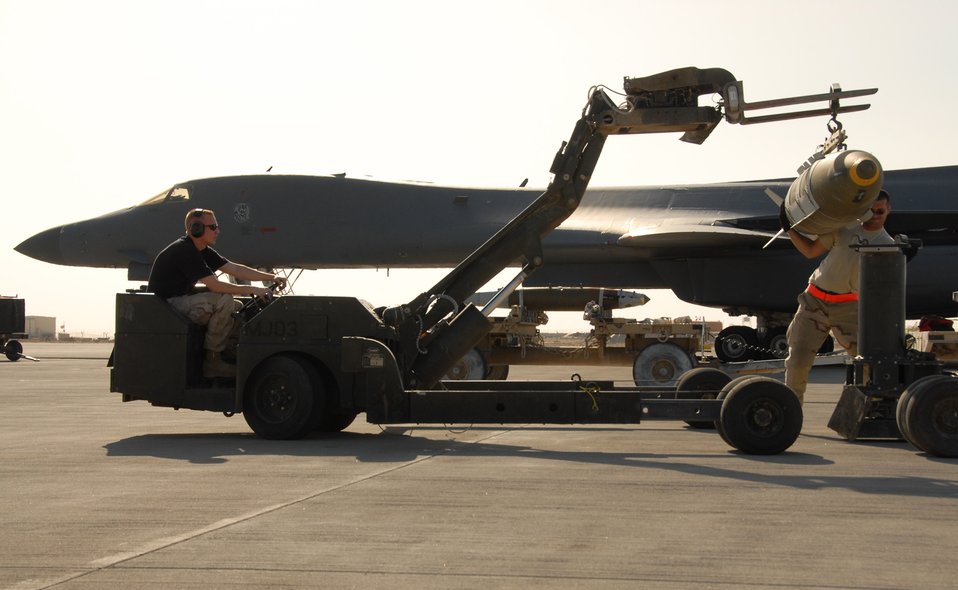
June 9 airpower summary

Air Force bomb loaders position a guided bomb unit-31 to be loaded on an Air Force B-1B Lancer at a base in Southwest Asia. B-1s fly close-air-support missions for both Operation Enduring and Iraqi Freedom.